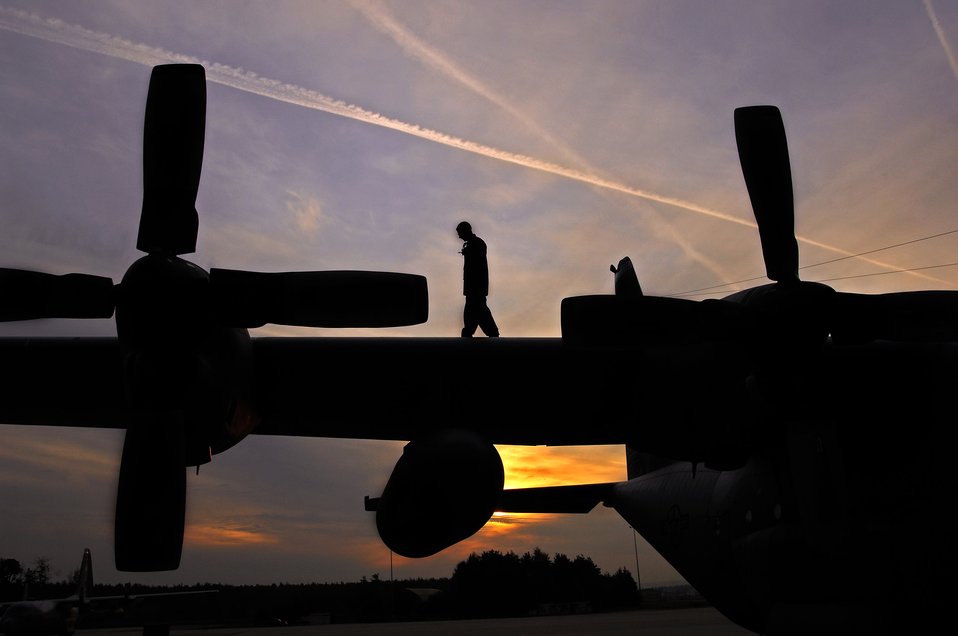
Underneath painted sky

Airman 1st Class Phillip Bean performs a preflight inspection on a C-130 Hercules aircraft at Ramstein Air Base, Germany, Sept. 18. Airman Bean is assigned to the 86th Aircraft Maintenance Squadron as a crew chief.